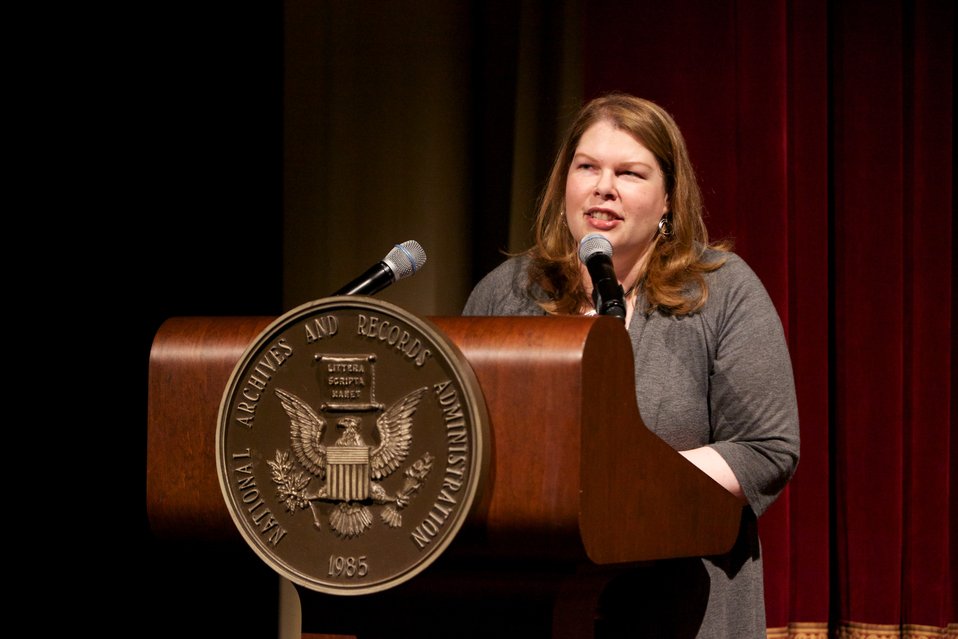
Freedom Summer